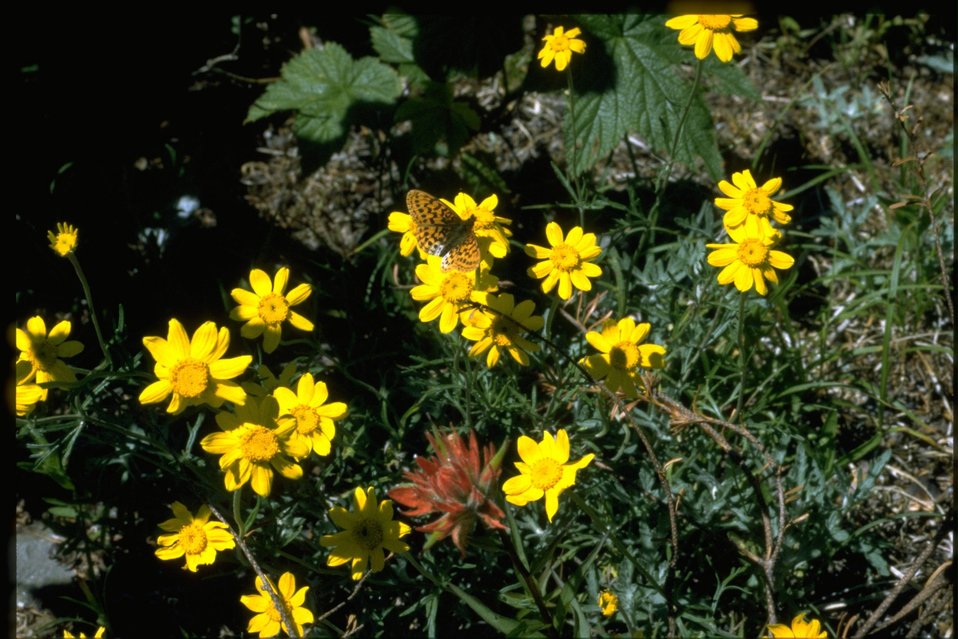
Medium shot of of Asteraceae, Eriophyllum lanatum.